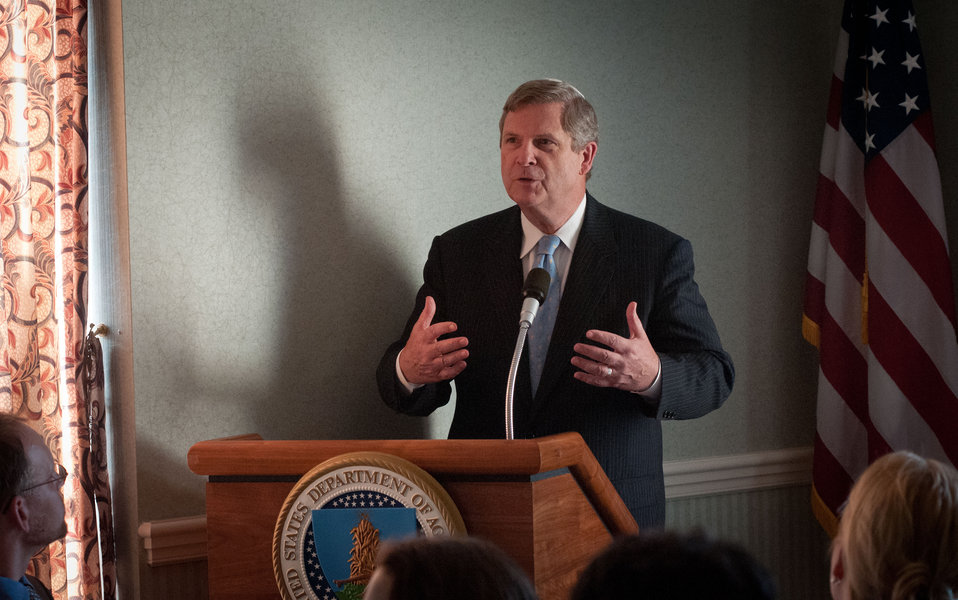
Agriculture Secretary Tom Vilsack spoke at the Food and Justice Passover Seder, at the U.S. Department of Agriculture headquarters in Washington, D.C., on Wednesday, April 4, 2012.